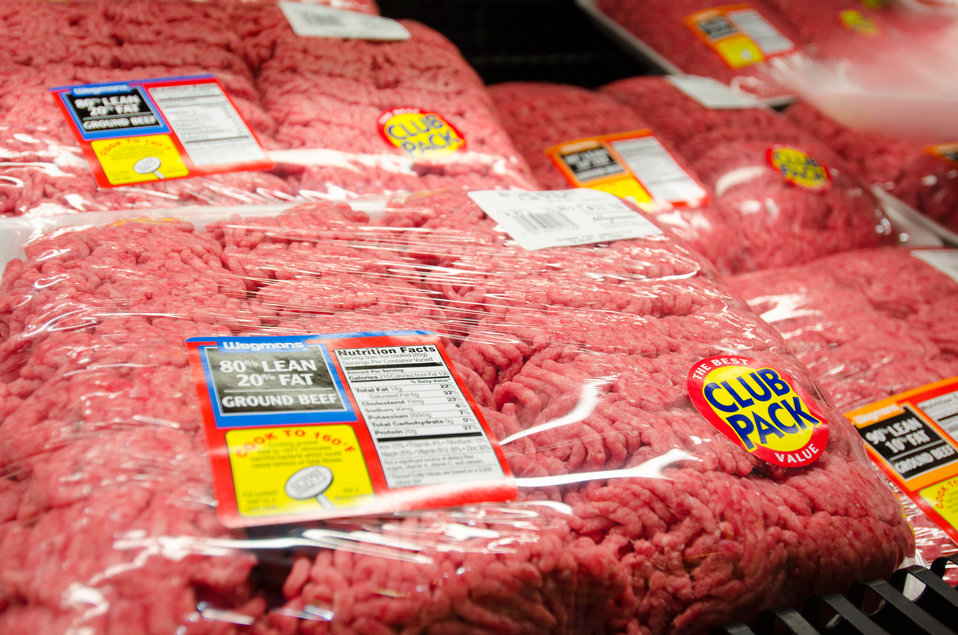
Ground beef meat products at a grocery store in Fairfax, Virginia, on March 3, 2011.